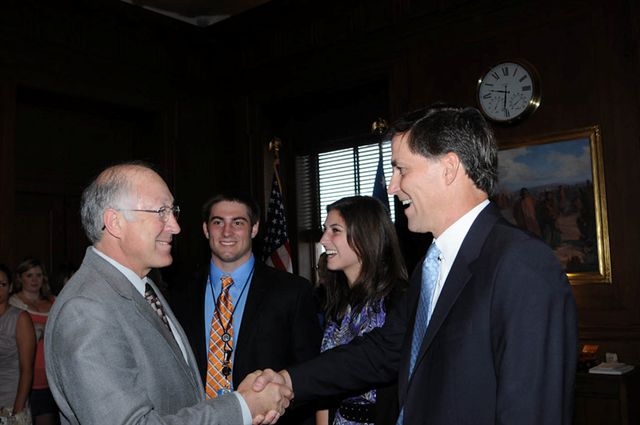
Dan Ashe Confirmed as 16th Director of U.S. Fish and Wildlife Service

Secretary Salazar shakes hands with new director, Dan Ashe.